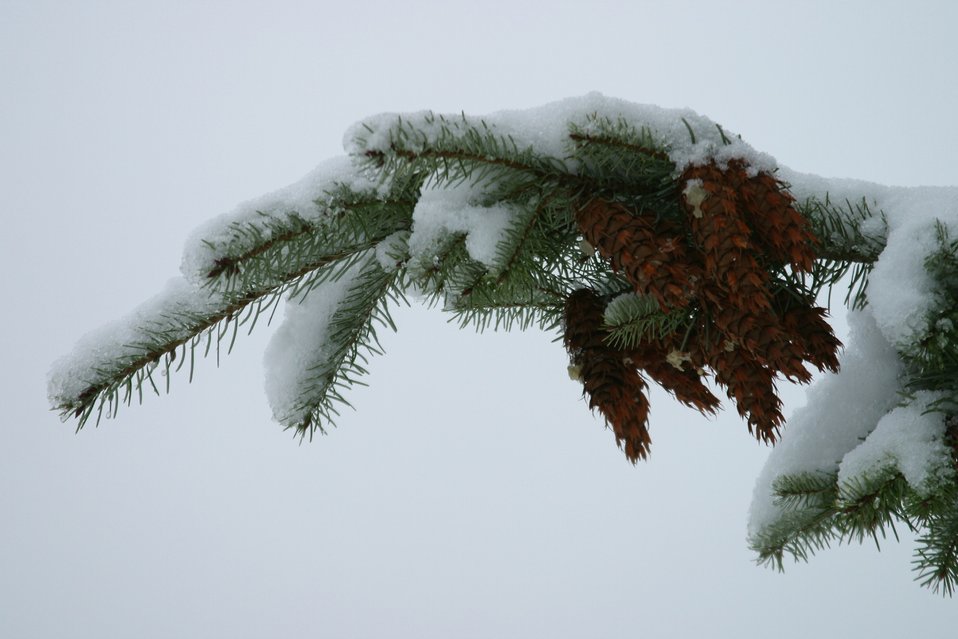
Snow and ice on Douglas Fir Bows and cones during the storm of January 2004.